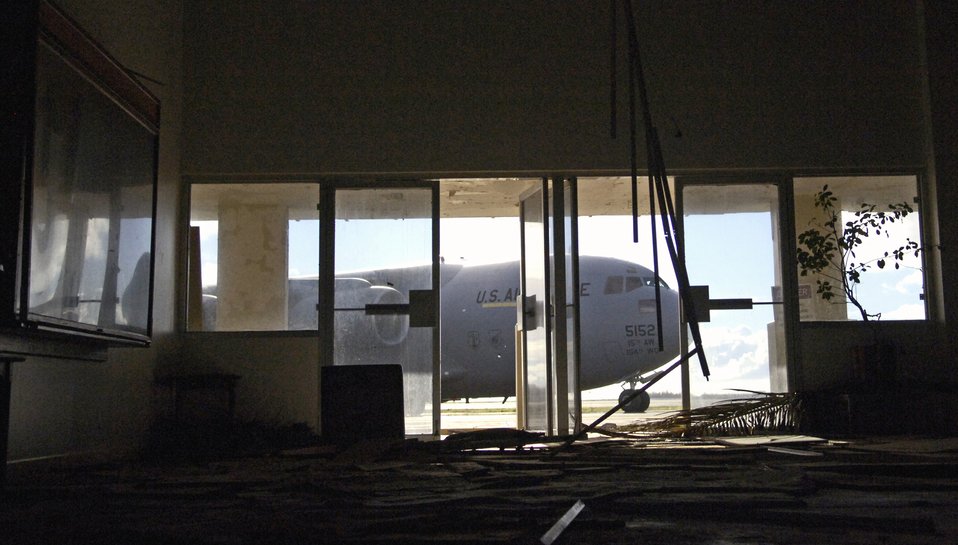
Hickam team begins Wake Island assessment

A C-17 Globemaster III is seen through the damaged airfield operations building on Wake Island Sept. 12. The C-17 is from the 535th Airlift Squadron at Hickam Air Force Base, Hawaii. The island was hit by Super Typhoon Ioke Aug. 31.